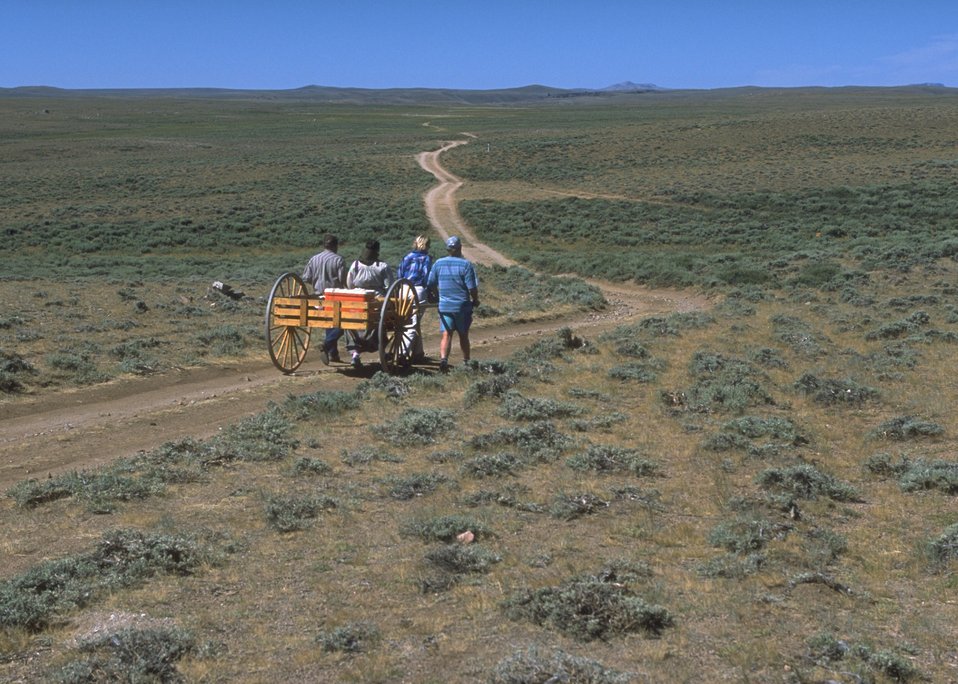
Hand cart re-enactment along the Mormon Trail, Lander Field Office.